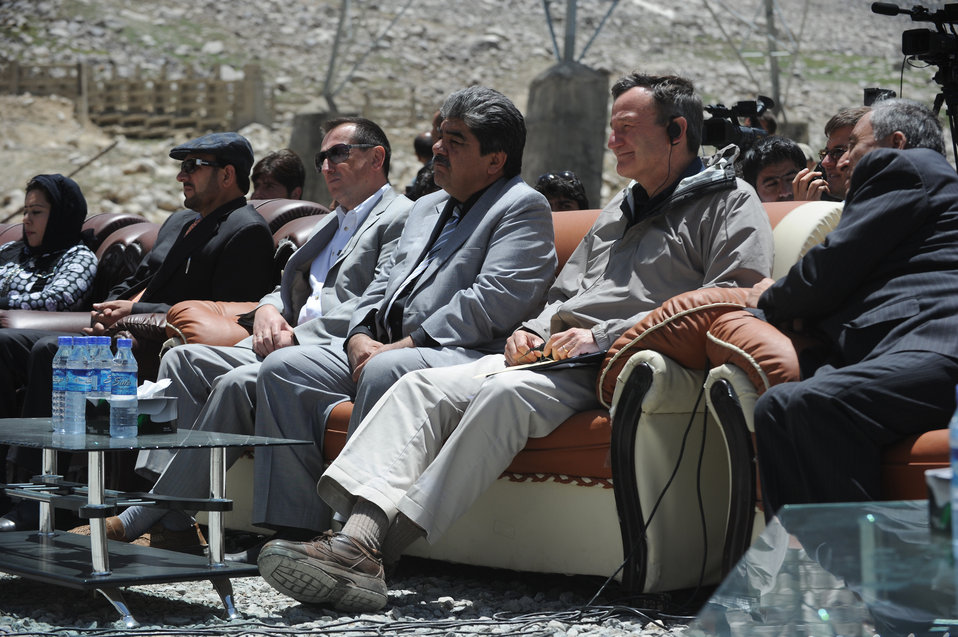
Parwan Governor Abdul Basir Salangi, Russian Ambassador Andrey Avetisyan, Minister of Public Works Abdul Qudos Niman Hamidi and U.S. Ambassador Karl W. Eikenberry attend a ceremony to mark the beginning of renovations at the Salang Tunnel on the border of Parwan and Baghlan Provinces, Afghanistan, on Wednesday, June 15, 2011. (S.K.Vemmer/Department of State)